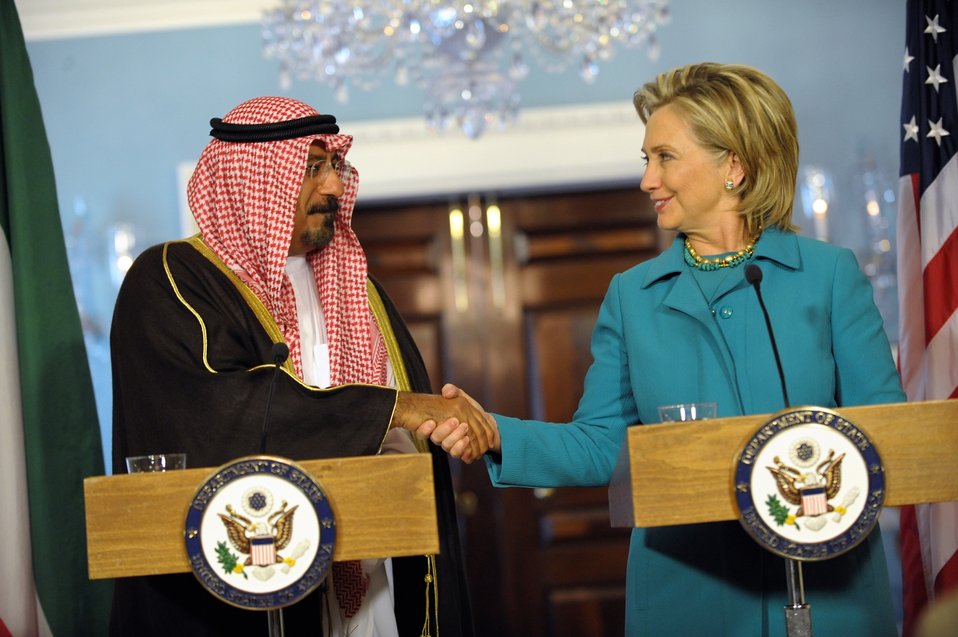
Secretary Clinton With Kuwaiti Deputy Prime Minister and Foreign Affairs Minister

U.S. Secretary of State Hillary Rodham Clinton hosts a bilateral meeting with H.E. Dr. Mohammad Sabah Al-Salem Al Sabah, Deputy Prime Minister and Minister of Foreign Affairs of the State of Kuwait at the U.S. Department of State, Washington, DC, April 30, 2010.